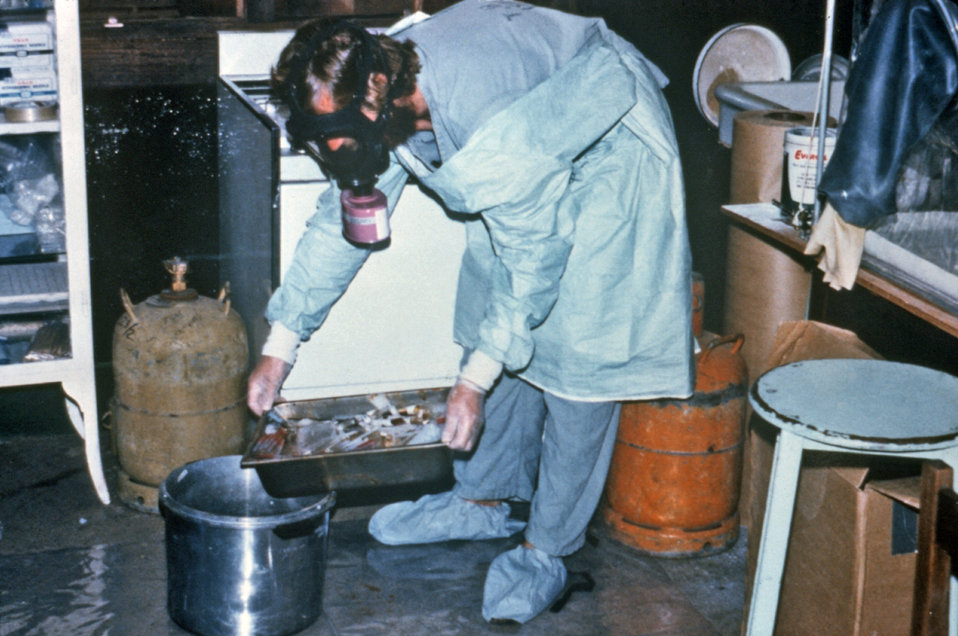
Here a heavily protected technician is shown discarding blood specimens collected during the Ebola outbreak in Zaire, 1976.